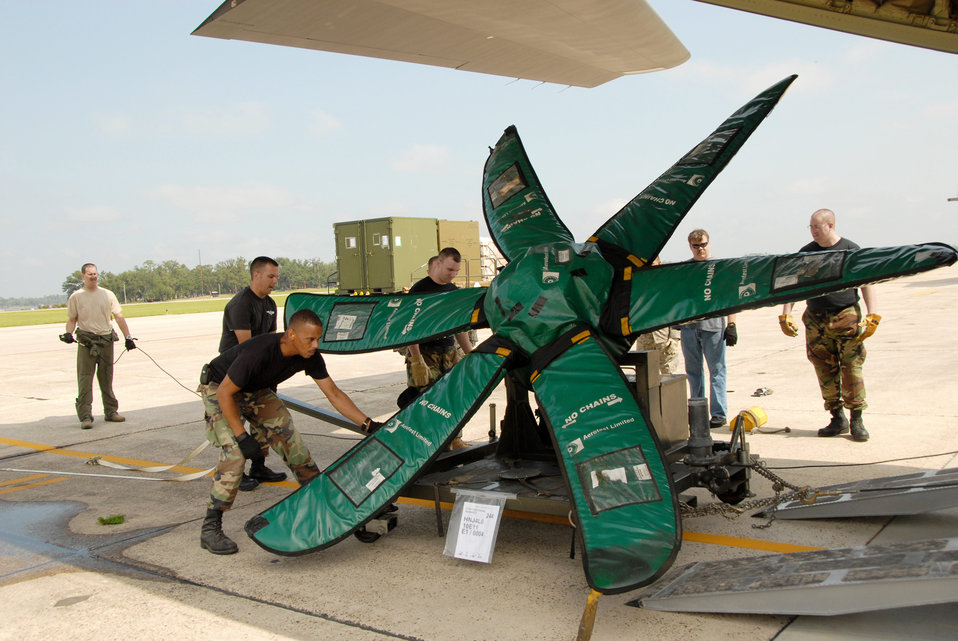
A twist here

Airmen work together to load a propeller into the back of a C-130J Super Hercules on the flightline at Keesler Air Force Base, Miss. Members of the 81st Training Wing were training with Airmen from the 41st Aerial Port Squadron in building pallets and loading aircraft for a deployment.